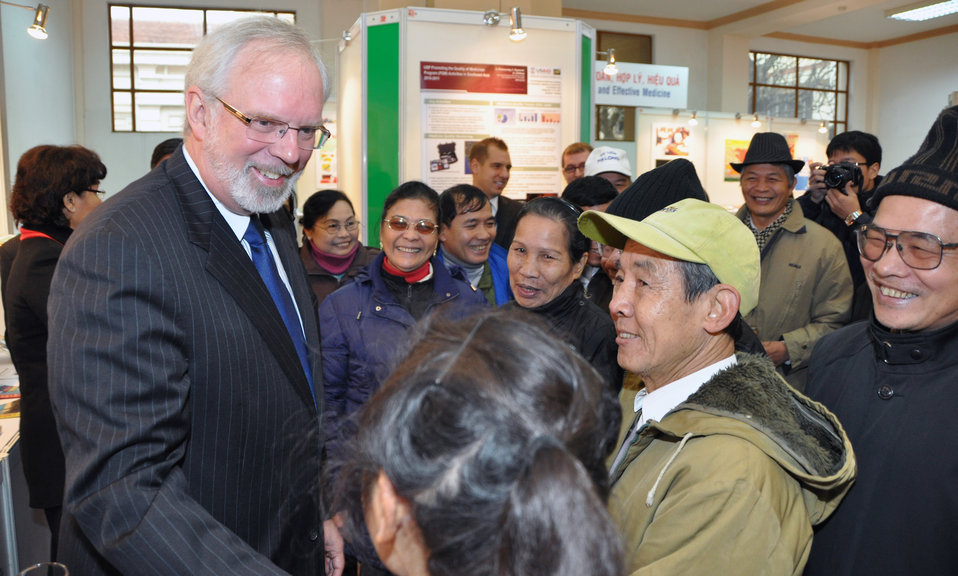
U.S. Ambassador David Shear opens safe medicine exhibition in Hanoi

Safe Medicine Exhibition